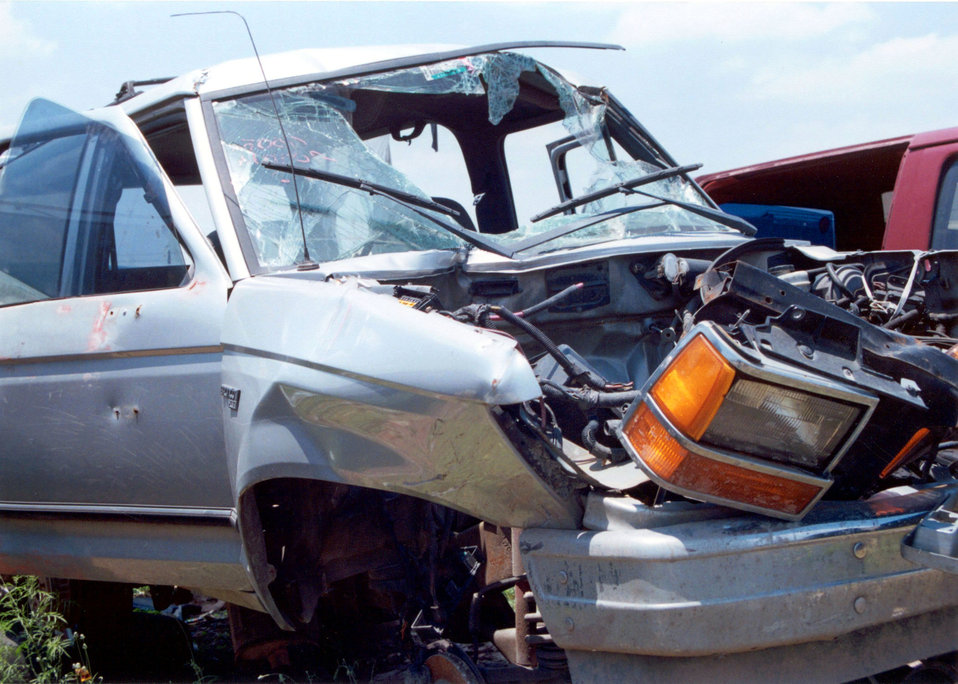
Car wreck

SAN ANTONIO (AFPN) -- The 101 Critical Days of Summer safety campaign begins on Memorial Day. Over the last five years, the Air Force has lost an average of 21 airmen during summer. The most significant loss of life involves private motor vehicles.